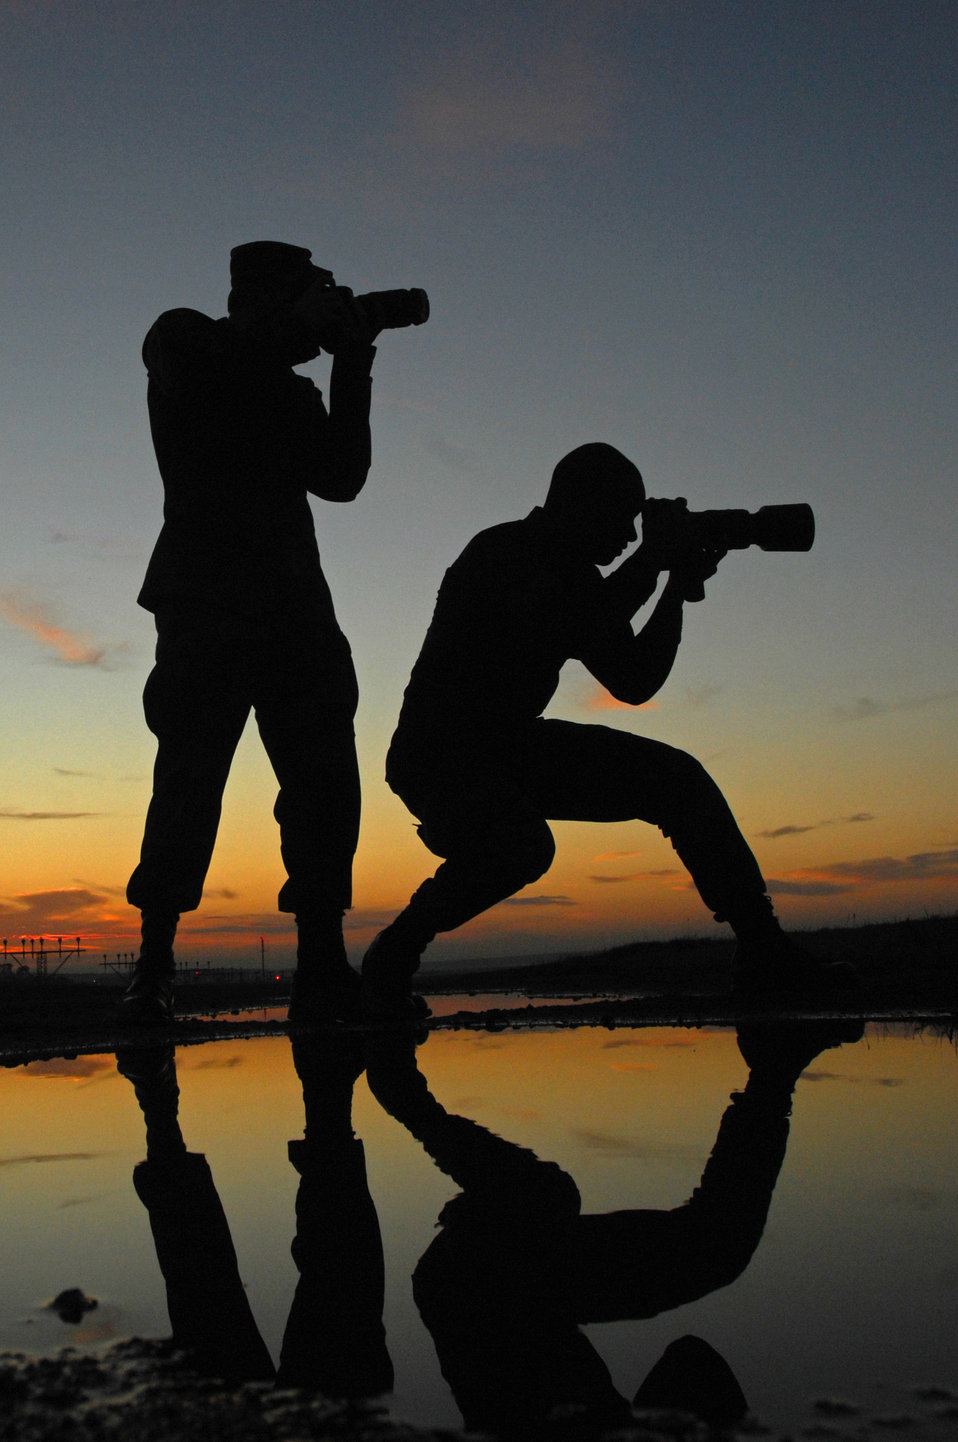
The sky is the limit

Airman 1st Class Tony Ritter and Airman 1st Class Kenny Holston capture images of incoming aircraft Nov. 3 at Ramstein Air Base, Germany. Airmen Ritter and Holston are 435th Air Base Wing public affairs photographers.